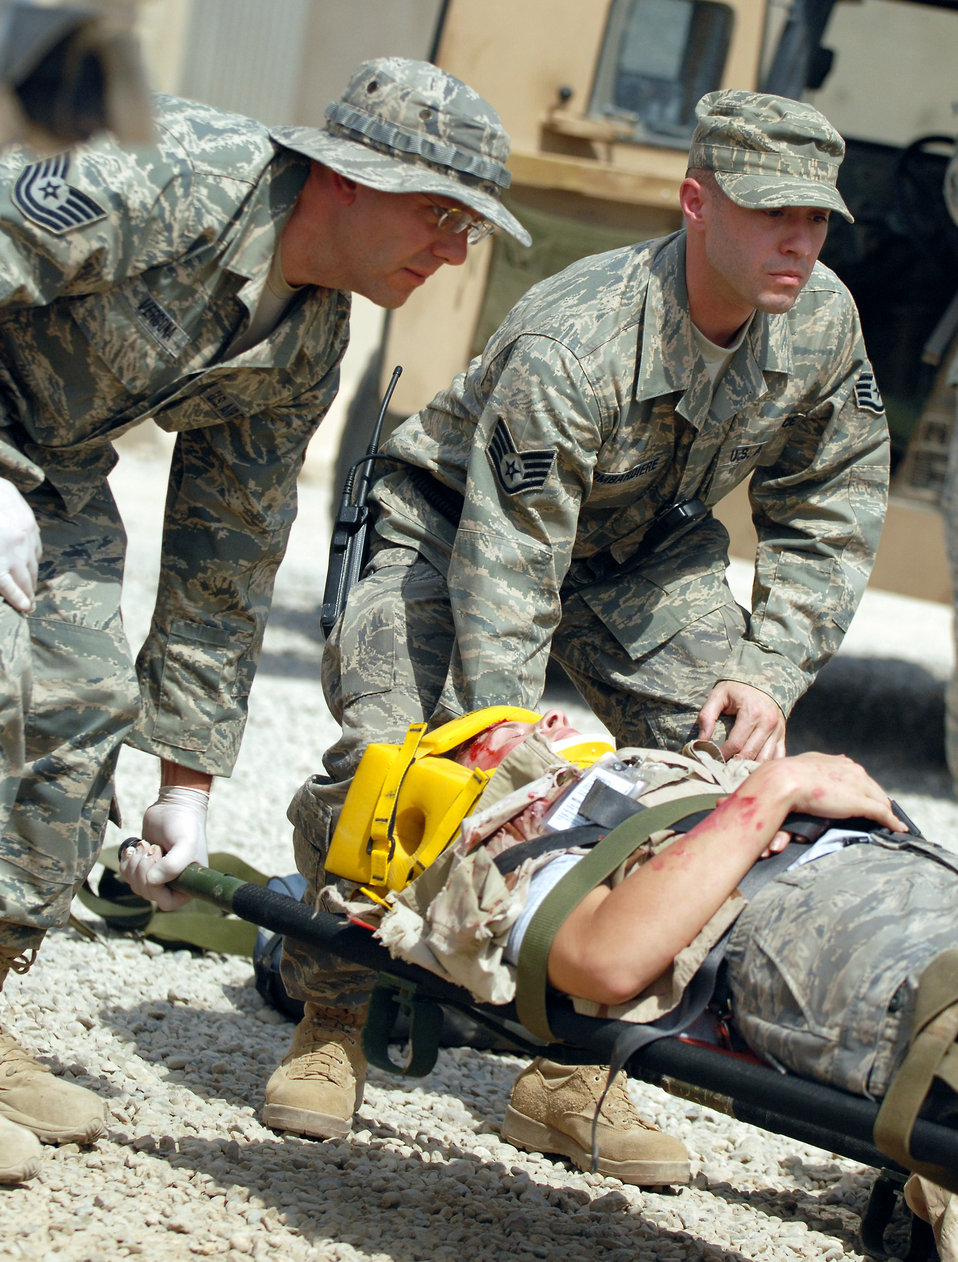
Practice makes perfect

Tech. Sgt. Joseph Vergona and Staff Sgt. Salvatore Bombardiere carry a wounded servicemember on a stretcher during a mass accident response exercise Aug. 11 at Joint Base Balad, Iraq. More than 100 Airmen and Soldiers participated in the joint exercise ensuring first responders are ready for any situation at any time. Both NCOs are deployed to the Combat Aeromedical Staging Facility here from Pittsburgh International Airport Air Reserve Station, Penn.